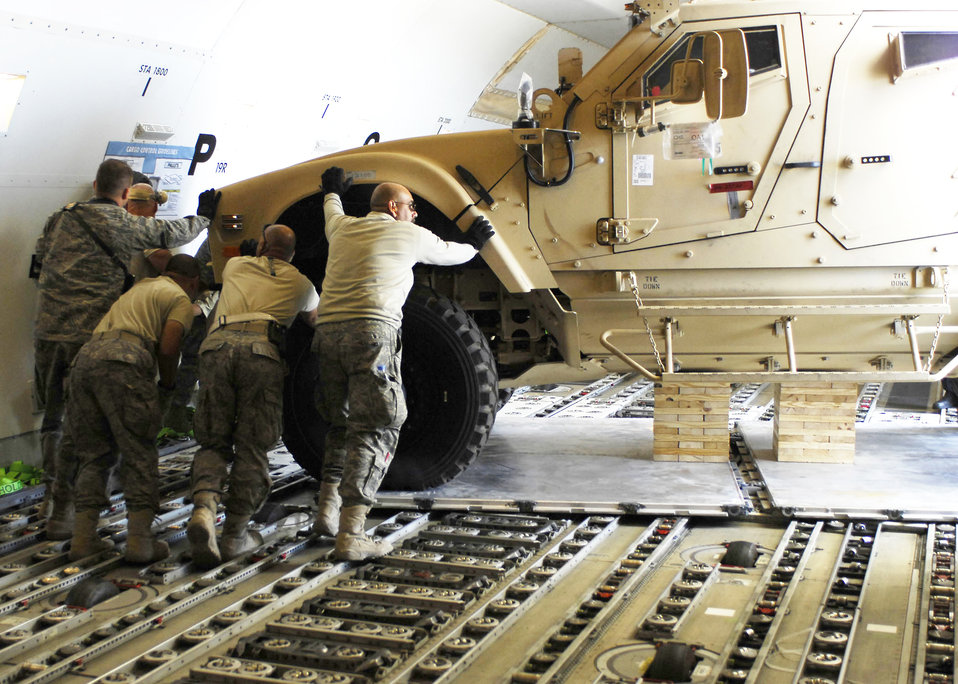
Bagrams new arrivals

Airmen from the 455th Expeditionary Aerial Port Squadron assist in unloading mine-resistant ambush-protected all-terrain vehicles Nov. 9, 2009, at Bagram Airfield, Afghanistan. The M-ATVs were flown on a Boeing 747 and are designed to replace the up-armored Humvee in Afghanistan. The M-ATVs support small-unit combat operations in highly restricted rural, mountainous and urban environments.